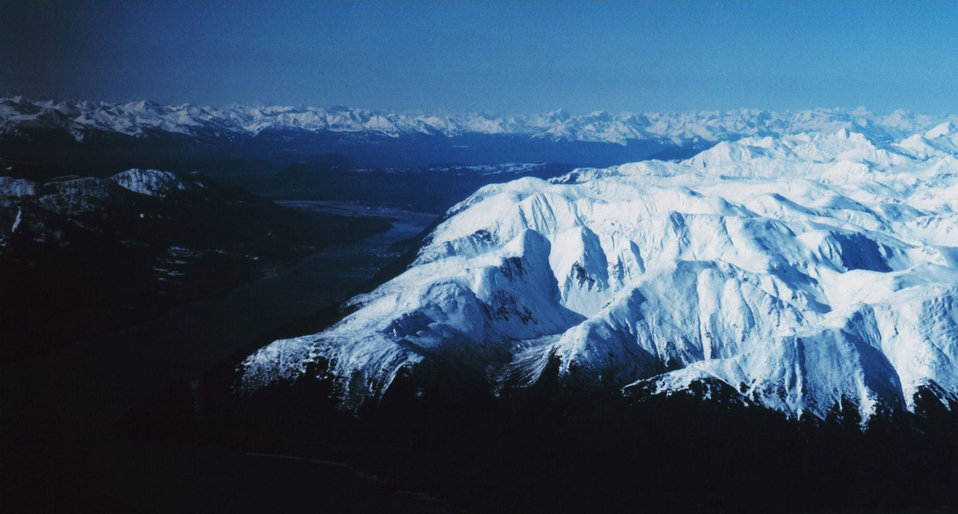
Gastineau Channel leading to Juneau